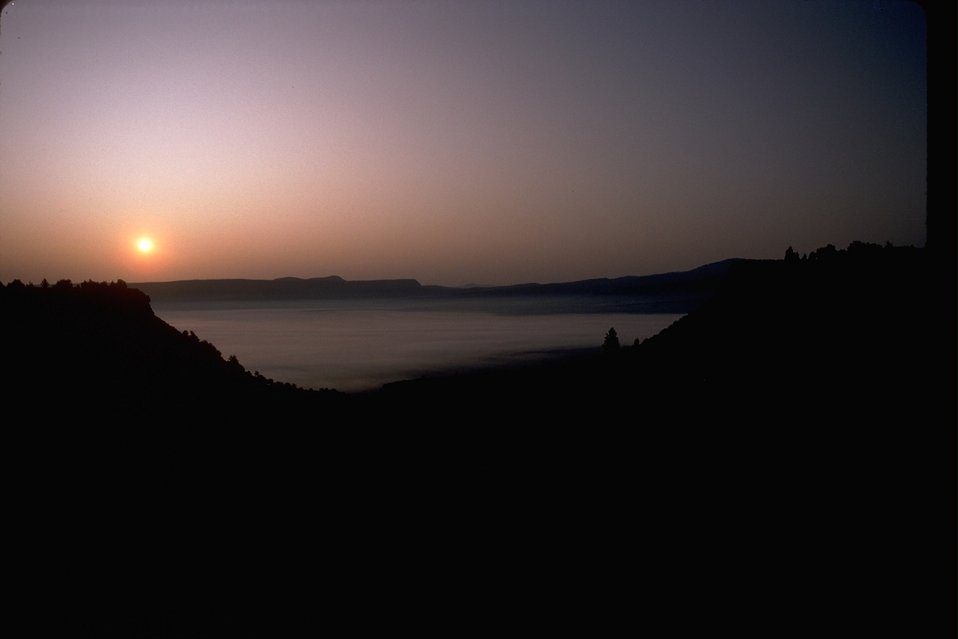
Sunset over lake.